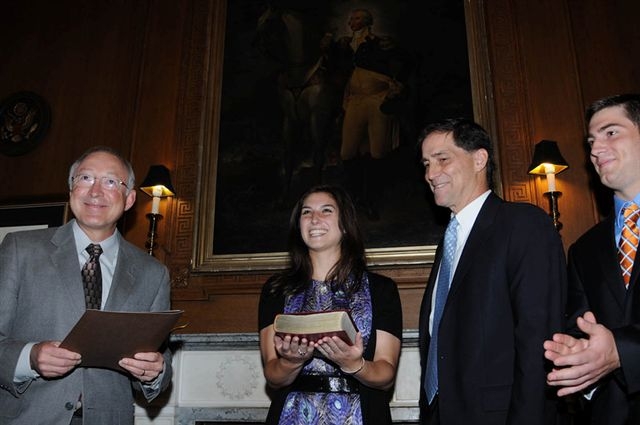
Dan Ashe Confirmed as 16th Director of U.S. Fish and Wildlife Service

Secretary Salazar and Ashe family prepare for swearing in ceremony.